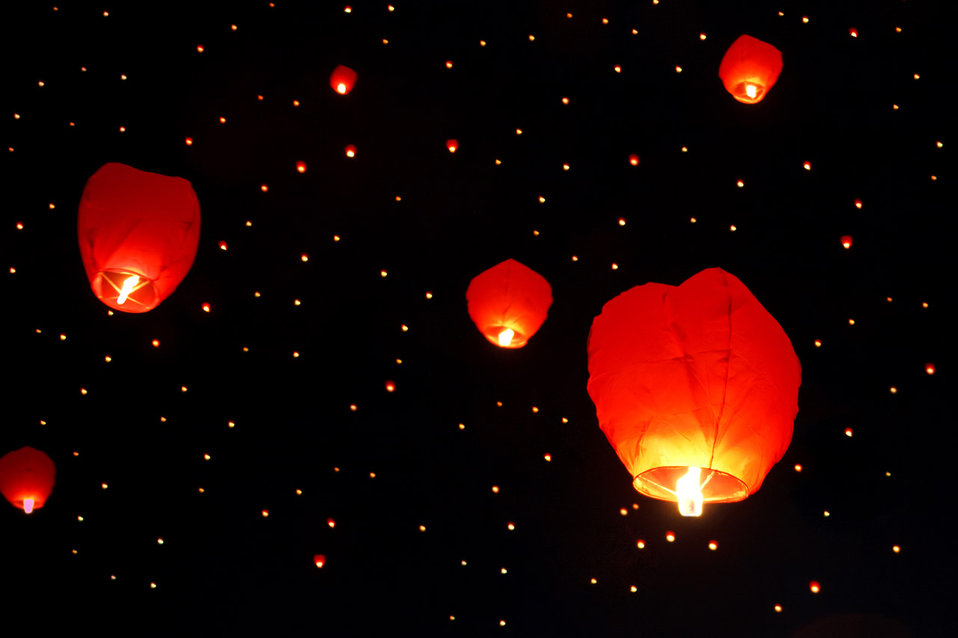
Floating lanterns

Many sky lanterns floating on dark sky.